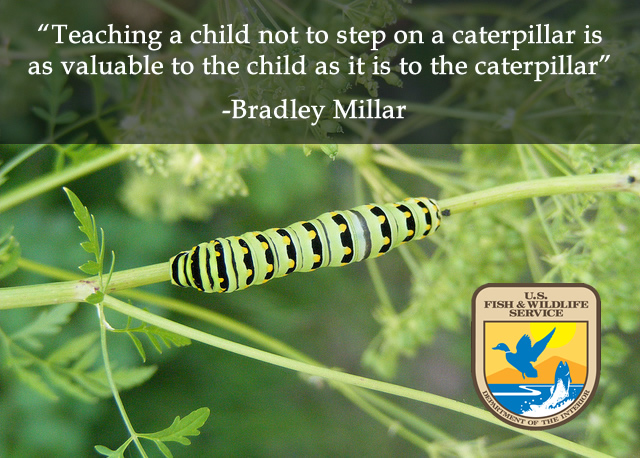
Valuable Lesson